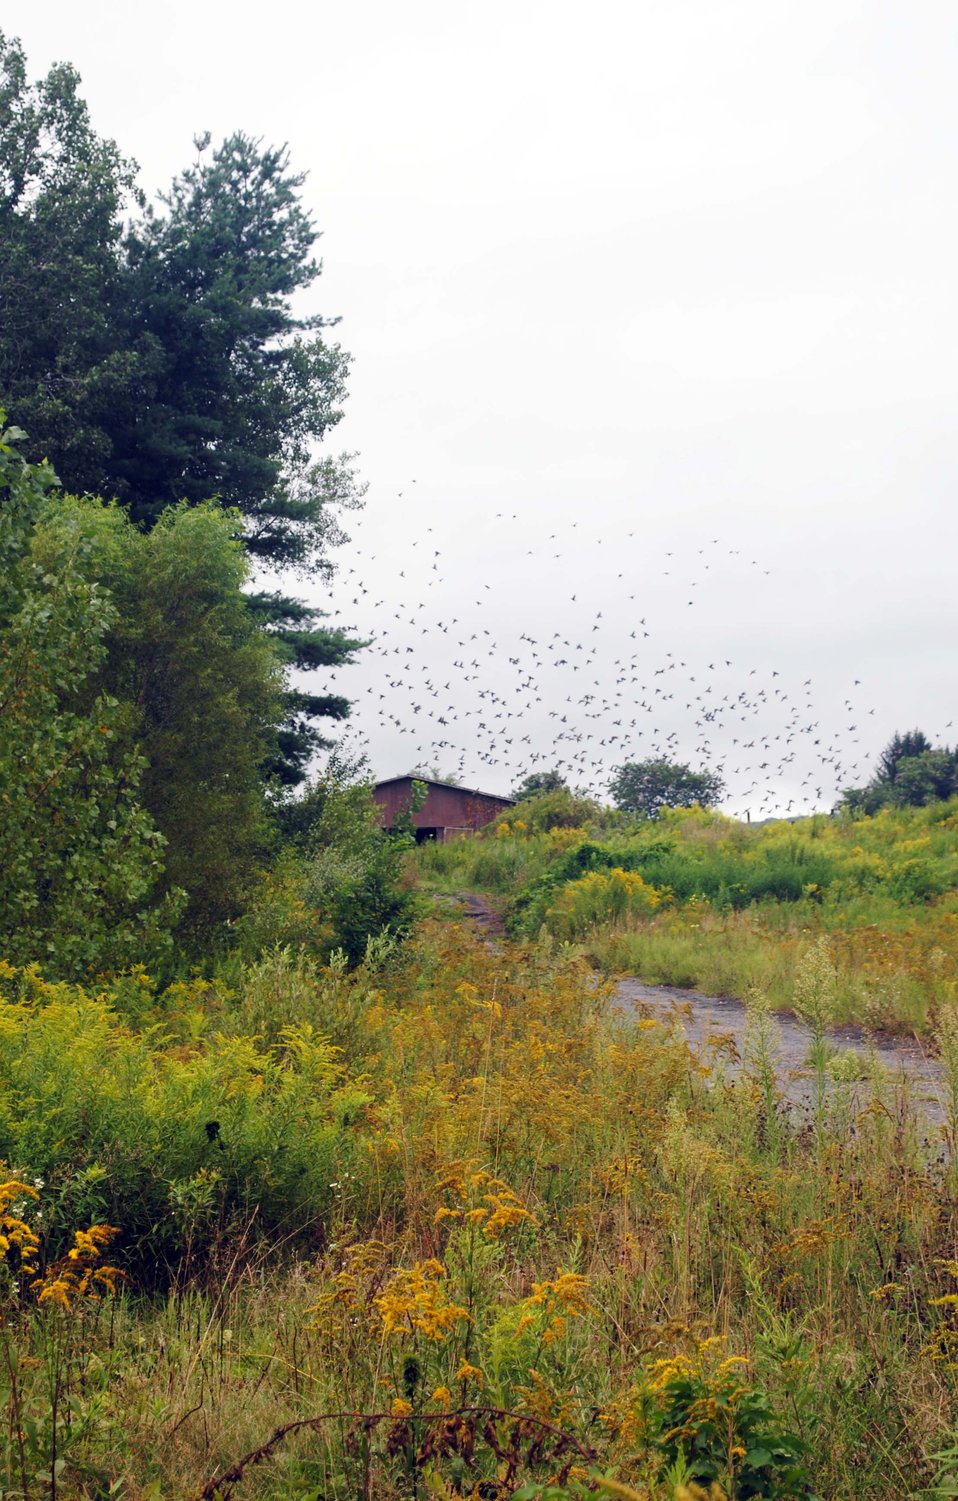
Flock of sparrows in flight at the Fort River Division of the Silvio O. Conte National Wildlife Refuge, Hadley, MA.